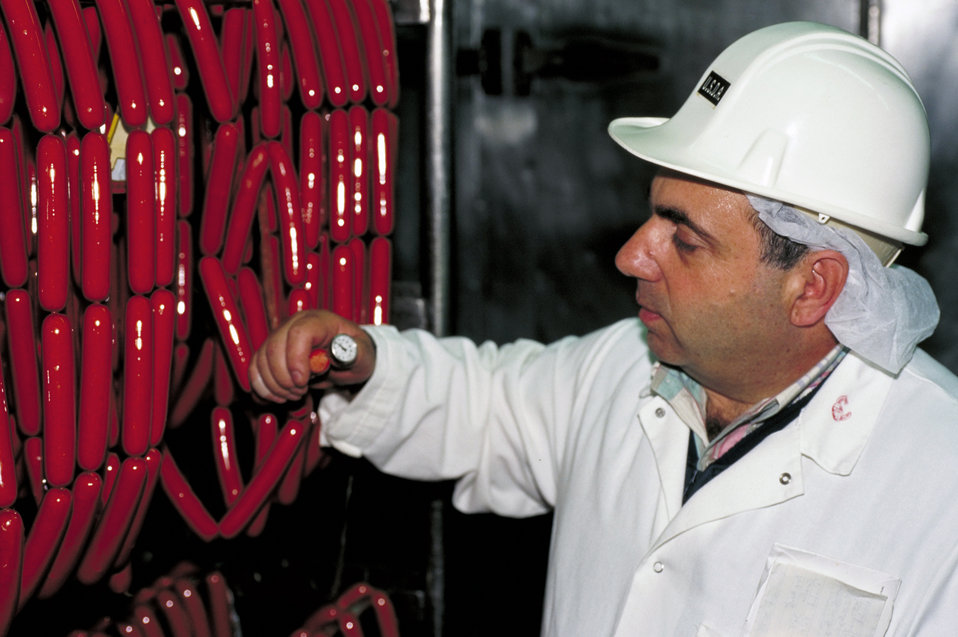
U.S. Department of Agriculture (USDA) Food Safety Inspection Service (FSIS) inspector checks the temperature of hot dogs at various control points to compare them with those measured and recorded by the plant to prevent multiplication of pathogenic bacteria in compliance with Hazard Analysis and Critical Control Points (HACCP) issued by FSIS on June 15, 1995.